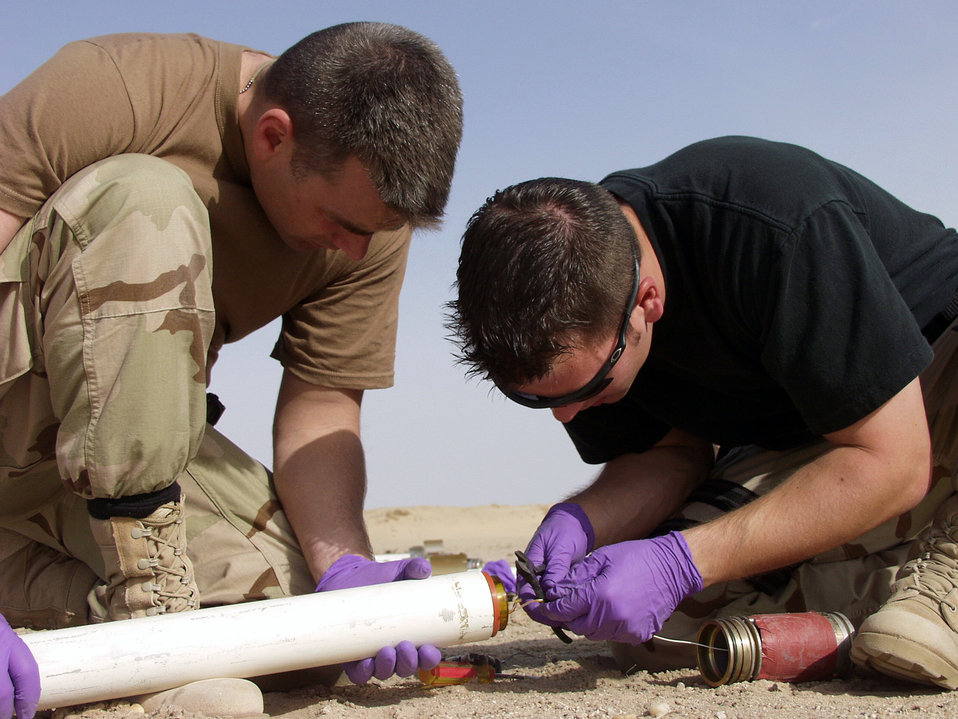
Careful work

OPERATION IRAQI FREEDOM -- Staff Sgt. Edward Lockhart (left) and Senior Airman Nick Last remove rocket propellant for disposal. Both airmen are explosive ordnance disposal technicians with the 386th EOD team at a forward-deployed location.